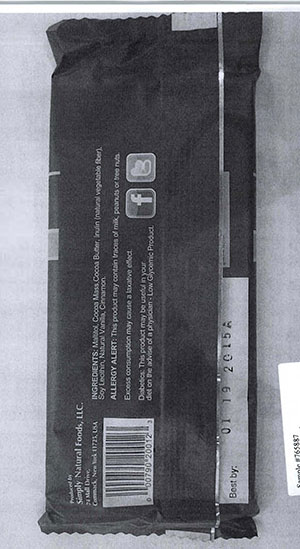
RECALLED – Dark Chocolate Bar

March 17, 2014 – Product Recall – Simply Natural Foods, LLC Issues Allergy Alert for High Levels of Milk Protein in Simply Lite Dark Chocolate Bars.